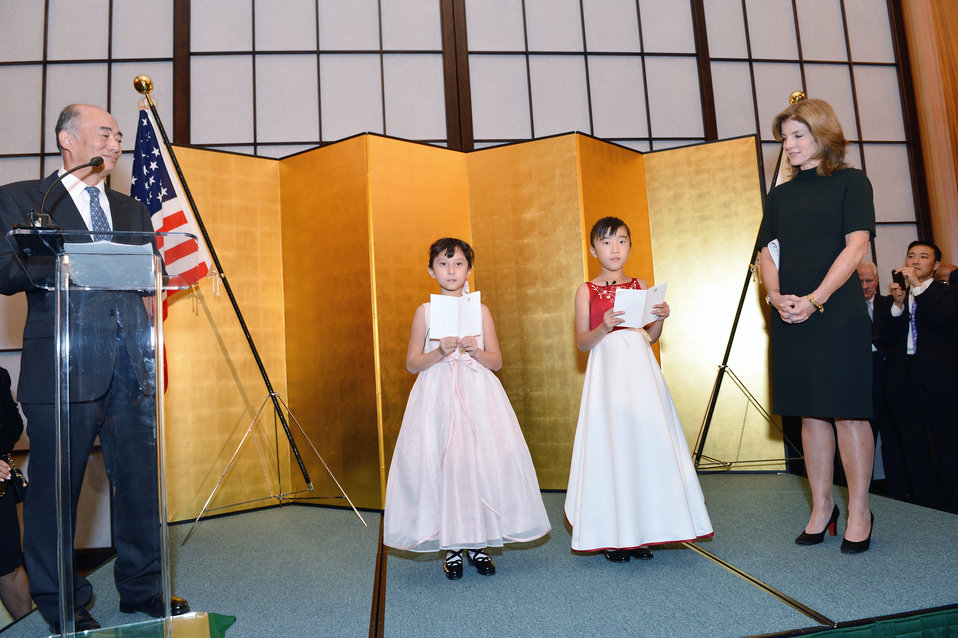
Japanese Girls Perform at a Reception in Honor of Ambassador Kennedy

Japanese girls perform at a reception in honor of U.S. Ambassador to Japan Caroline Kennedy and her husband, Dr. Edwin Schlossberg, at Japanese Ambassador to the U.S. Kenichiro Sasae's residence in Washington, D.C., on November 12, 2013.